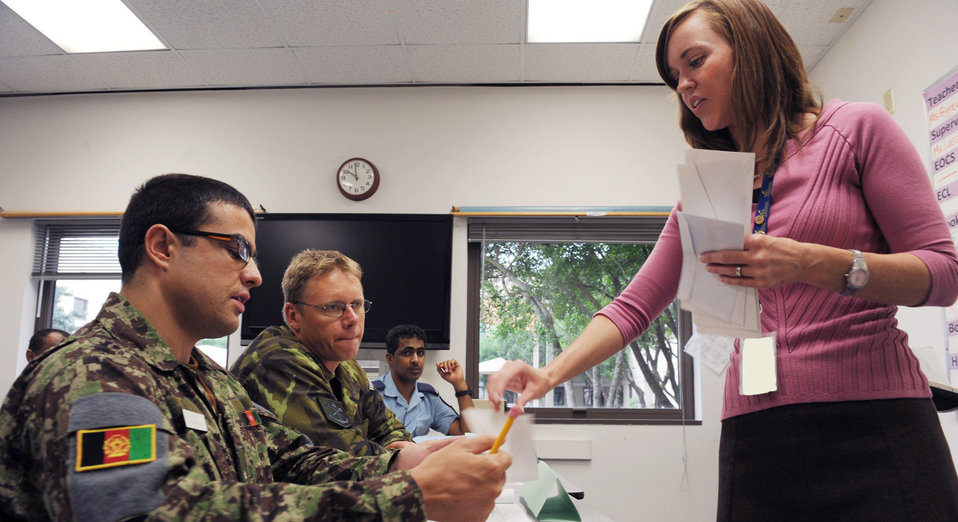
Language Institute's mission reaches for the future

International military students receive a class assignment from Andrea Gjorevski as she asks questions during a general English class recently at the Defense Language Institute at Lackland Air Force Base, Texas. Mrs. Gjorevski is a general English section instructor.